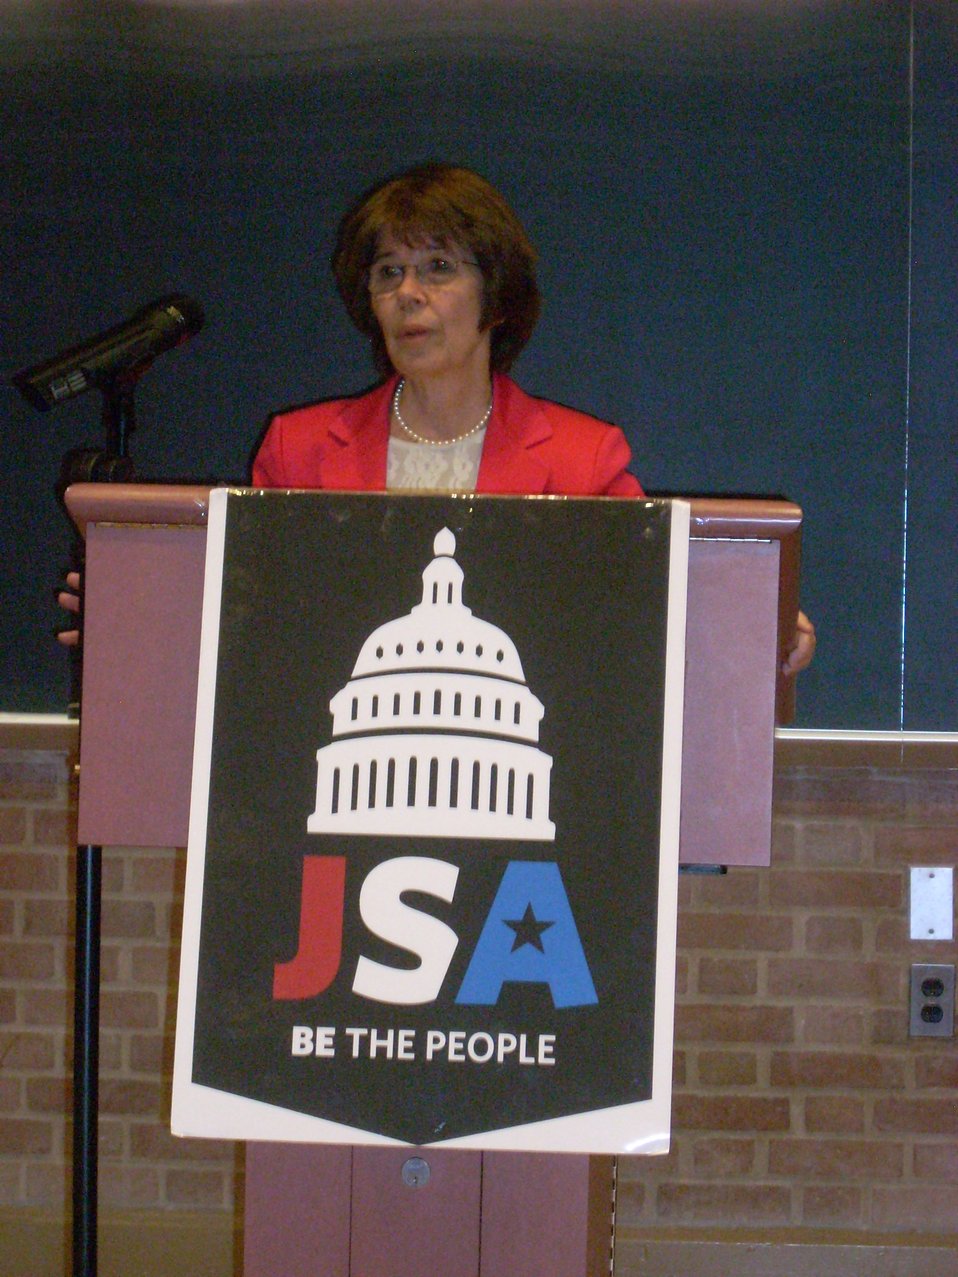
Maryruth Coleman Speaks With High School Students

Maryruth Coleman, Economic Policy Analysis and Public Diplomacy Director for the Bureau of Economic, Energy and Business, speaks with high school students interested in what Economic Officers do in the Foreign Service at Georgetown University in Washington, D.C., on June 30, 2011.